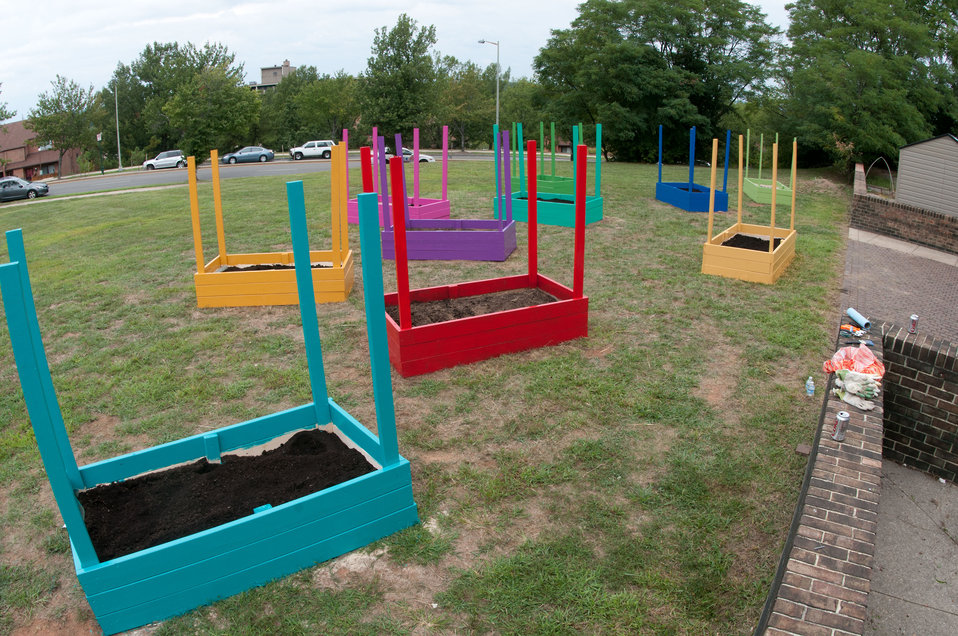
U.S. Department of Agriculture (USDA) People’s Garden Executive Master Gardeners, friends, and family, along with Washington Capitals fans are volunteering in District of Columbia Public Schools’ (DCPS) Beautification Day, on Saturday, August 25, 2012, at Thurgood Marshall Elementary School, in Washington, D.C. Each year people are invited to help “spruce up” public school facilities in preparation for the first day of school. More than 70 volunteers pitched in at this large school facility. The People’s Garden effort involves building and painting raised planter boxes, then preparing the soil mixture so they are “ready to grow.” Additionally, a team that includes descendants of U.S. Supreme Court Justice Thurgood Marshall assembles a prefabricated garden toolshed. The Justice’s son, John Marshall leads the team, which includes Brianna the Justice’s great-grand daughter in one of many multi-generational efforts at this school today. Washington Capitals Forward Mike Riberio, his family and mascot Slapshot participated in every project underway at Marshall School. From the outside gardens, to inside mural painting, and robotics worktable construction, the teams made their goals.